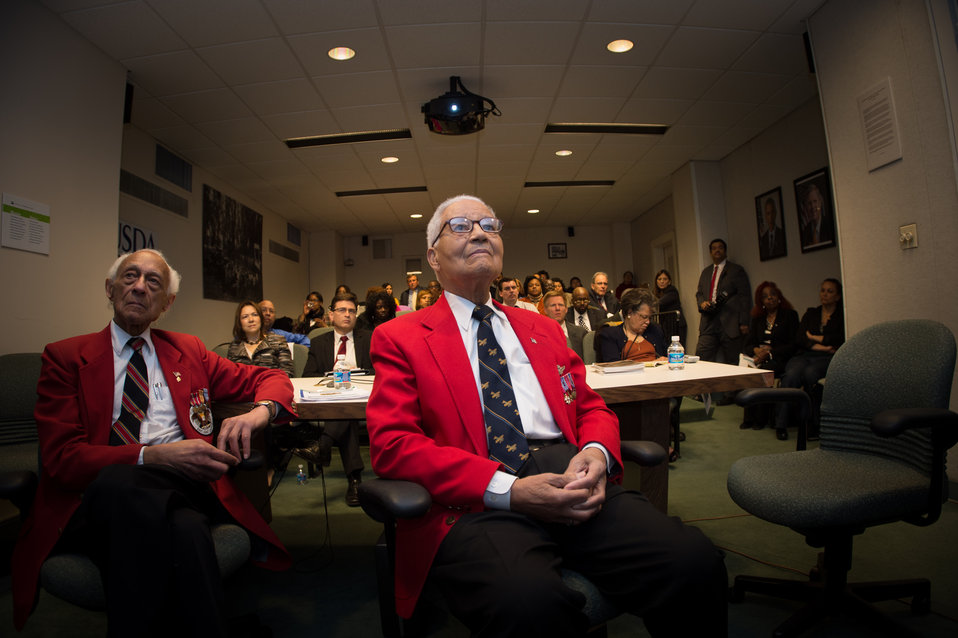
Tuskegee Airmen Incorporated (TAI) National Historian William F. Holton and Pilot and Tuskegee Airman, Colonel Charles Edward McGee, U.S. Air Force (USAF) ret. at the U.S. Department of Agriculture's (USDA), Office of the Assistant Secretary for Civil Rights (OASCR) program “In conversation With Tuskegee Airmen” honoring the airmen’s successes both overseas and at home at USDA in Washington, D.C. on Thursday, Mar. 27, 2014. Col. McGee presented his experiences in the Army Air Corp, (later the Army Air Force and U.S. Air Force). Questions from the audience provided several opportunities for discussion about civil rights challenges and how they achieved success and respect.